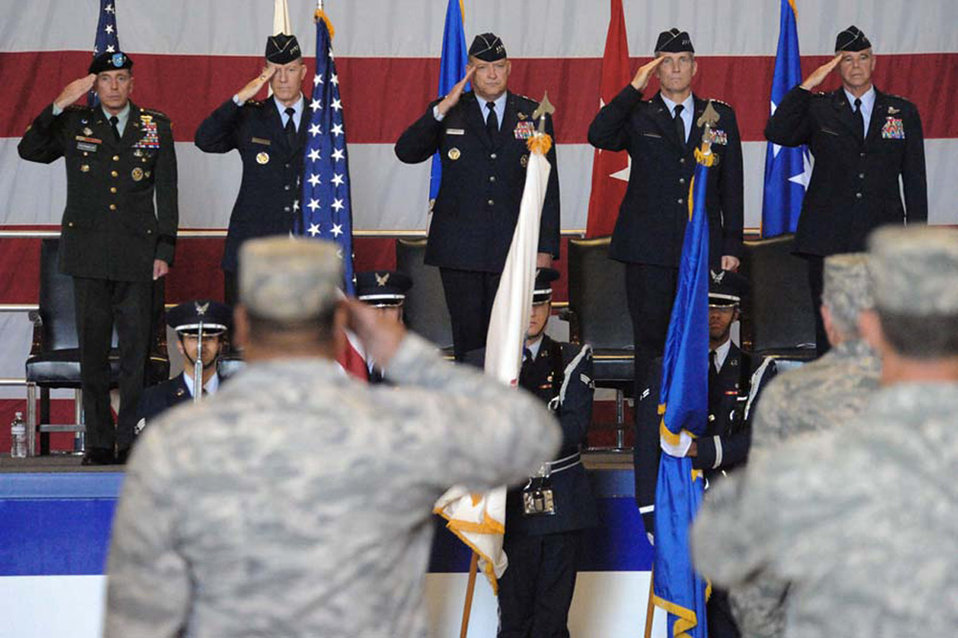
New leaders take command of redesignated AFCENT, 9th Air Force

Army Gen. David Petraeus (left to right), Gen. John D.W. Corley, Lt. Gen. Gary North, Lt. Gen. Gilmary Michael Hostage III and Maj. Gen. William L. Holland salute the colors during the 9th Air Force/U.S. Air Force Central change-of-command ceremony Aug 5 at Shaw Air Force Base, S.C. General North relinquished command of 9th AF/USAFCENT, which was re-designated as AFCENT Command and a new headquarters 9th Air Force was activated. General Petraeus is the U.S. Central Command commander, General Corley is the Air Combat Command commander, General North is the outgoing 9th Air Force and U.S. Air Forces Central commander, General Hostage is the receiving USAFCENT Command commander, and General Holland is the receiving 9th Air Force commander.